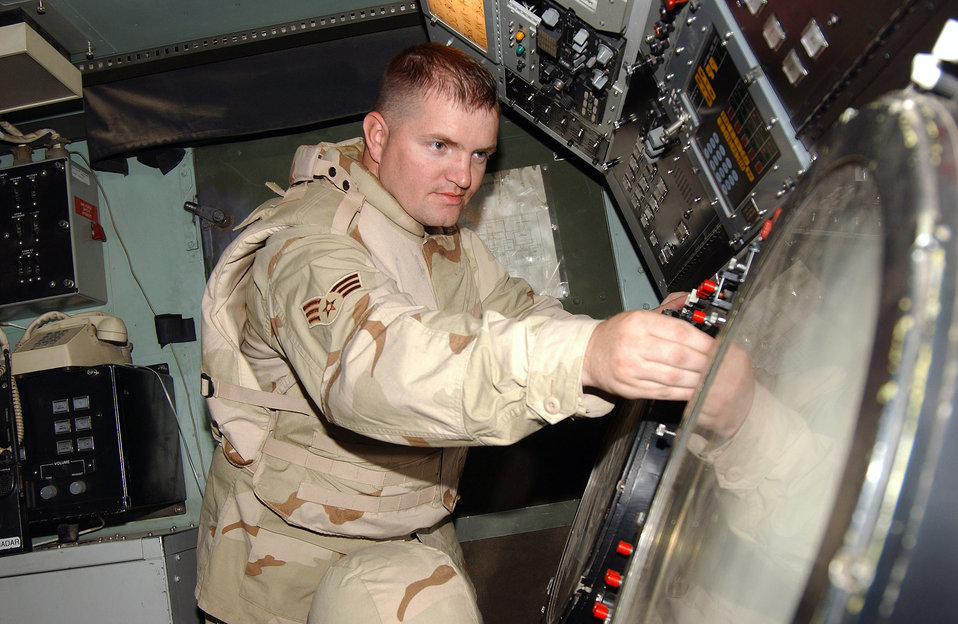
Maintainers keep Balad radar running 'round the clock

Senior Airman Stephen Manchester performs preventative maintenance on a UPA-59 decoder during a daily inspection June 12 on one of the TPS-75 air control and warning radar at Balad Air Base, Iraq. Airman Manchester, a 727th Expeditionary Air Control Squadron radar maintenance technician, is deployed from Hill AFB, Utah.